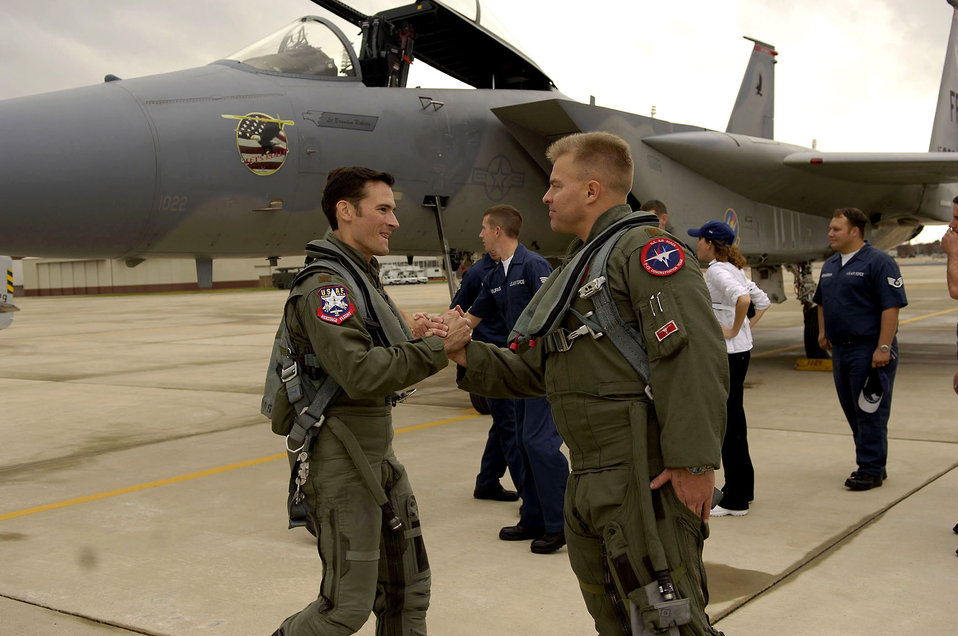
F-15 demo team transitions to F-22 demo team

Maj. Jason Costello (right) and Maj. Paul Moga share words before the F-15 Eagle/F-22 Raptor Passing of the Torch Ceremony Dec. 1 at Langley Air Force Base, Va. The ceremony showcased the end of an era for the F-15 East Coast Demo Team and the beginning of the F-22 Raptor leading the way in aerial fighter demonstration. Major Costello is an F-15 East Demonstration team pilot, and Major Moga is the new F-22 Raptor East Coast Demonstration team pilot.